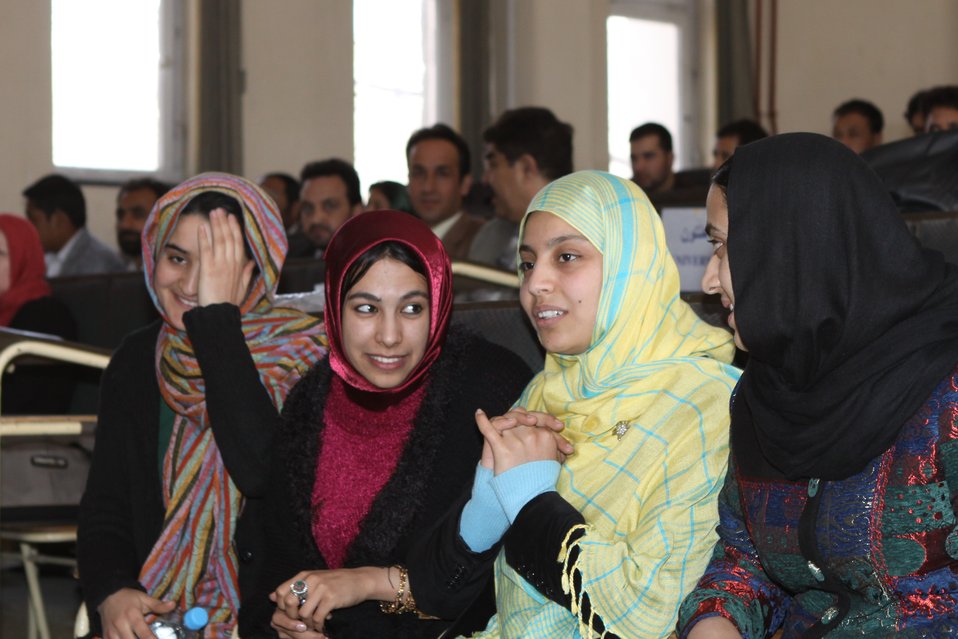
Female University Students Complete Internship

Kabul, Afghanistan | March 16, 2011 – In response to a demand for qualified Afghan engineers, Kabul University celebrated completion of an intensive five-month Mentor Protégé Training Program today by 10 female fourth year university students. The Training Program is a joint effort between the Government of the Islamic Republic of Afghanistan, the U.S. Agency for International Development (USAID), and the Universities of Kabul, Kandahar, Alberoony in Kapisa, Shiekh Zayed in Khost. The graduation ceremony highlighted collaboration with these national institutions in building the technical skills of young Afghans, made possible by USAID.

Four of the interns are engineers, while the remaining six are from the faculties of computer science, economics, and psychology.

Speaking about the event, H.E. Minister of Public Works Abdul Qudus Hamidi said, “The future of Afghanistan lies in developing the skills of our youth, and the engineering skills of these graduates today represent a small but important step forward for the country.”

Keynote speakers at the ceremony included H.E. Deputy Minister of Higher Education Abdul Rahim; USAID Senior Deputy Mission Director Robert Hellyer; and Chancellor of Kabul University Professor Hamidullah Amin. Approximately 150 people, including current and former students attended the graduation.

Launched last year, the Mentor Protégé Training Program has provided qualifying students the opportunity to intern with USAID’s Strategic Provincial Roads-South and East Afghanistan project and gain practical experience in a real work environment. The goal of the program was to offer interns the opportunity to gain hands-on experience to reinforce their formal studies. A total of 30 students from four national universities have benefitted from this program.

“The promotion of women’s rights is integrated into the overall U.S. Government development strategy and can be found in key programs, including education, healthcare, security, rule of law, political participation, agriculture, and economic development,” said Robert Hellyer. “The U.S. Government is committed to the Afghan leadership of programs that directly enhance development, particularly as it relates to women’s issues.”

This event also highlighted the learning achievements of students and emphasized the importance of hands-on internship programs. The curriculum is designed to instill students with the knowledge and confidence to qualify for engineering positions upon completion of their fourth year at their respective universities.